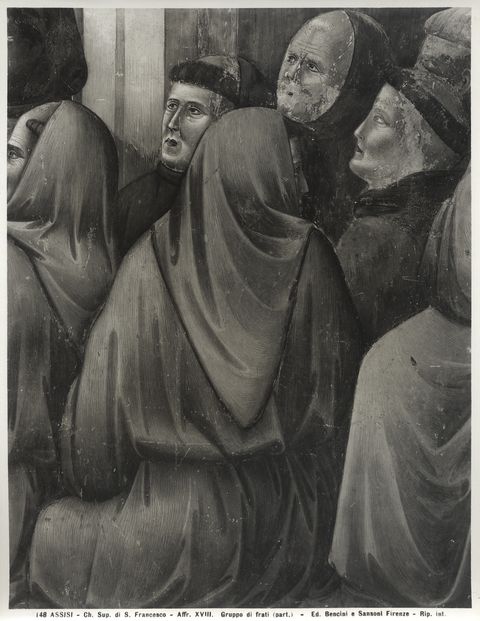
'giotto', Apparizione di san Francesco d'Assisi al capitolo di Arles 12